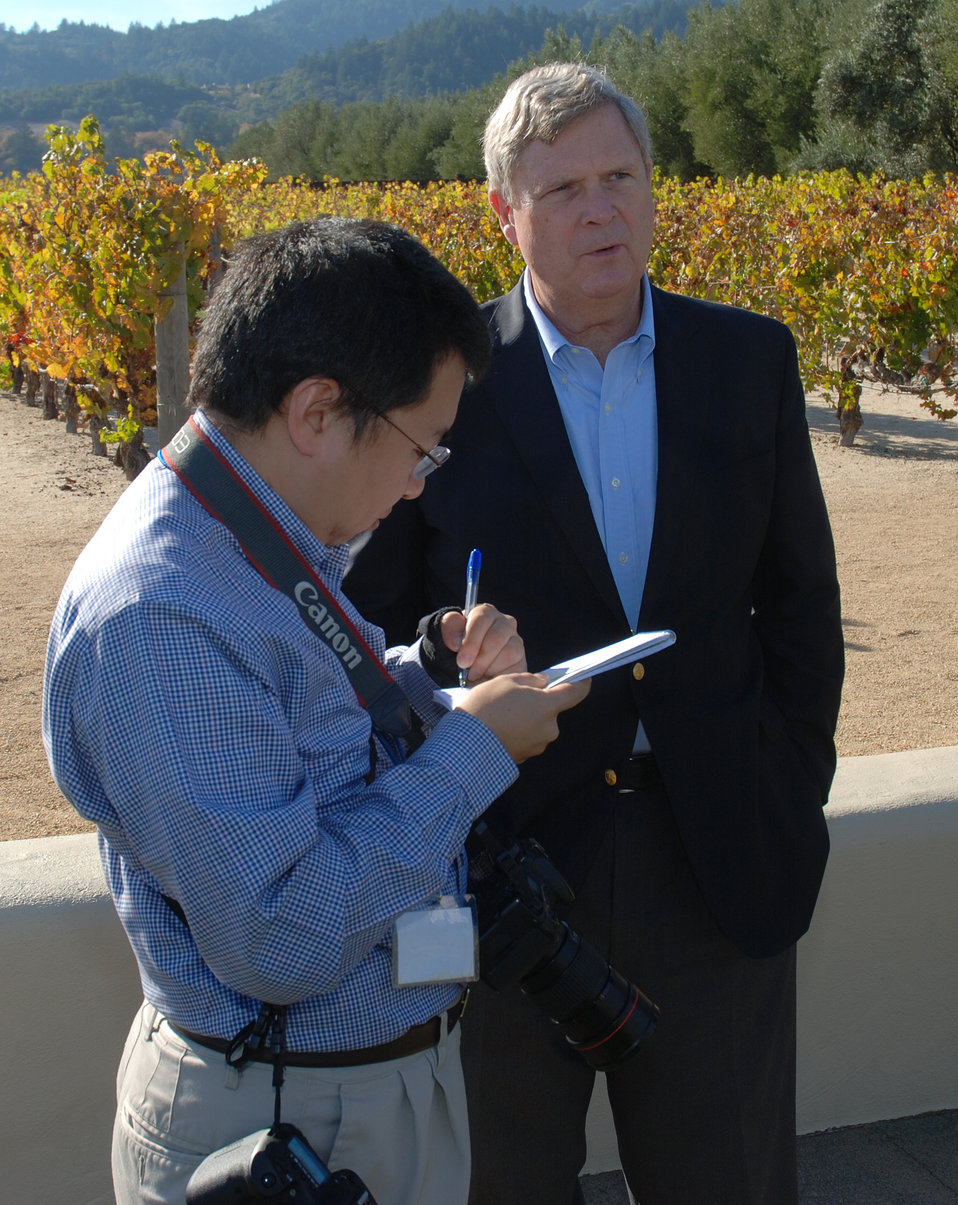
Agriculture Secretary Thomas Vilsack meets with a reporter from the Napa Register at the California wine growers’ roundtable at the Mondavi Winery in Napa, CA on Sunday, Nov. 17, 2013.